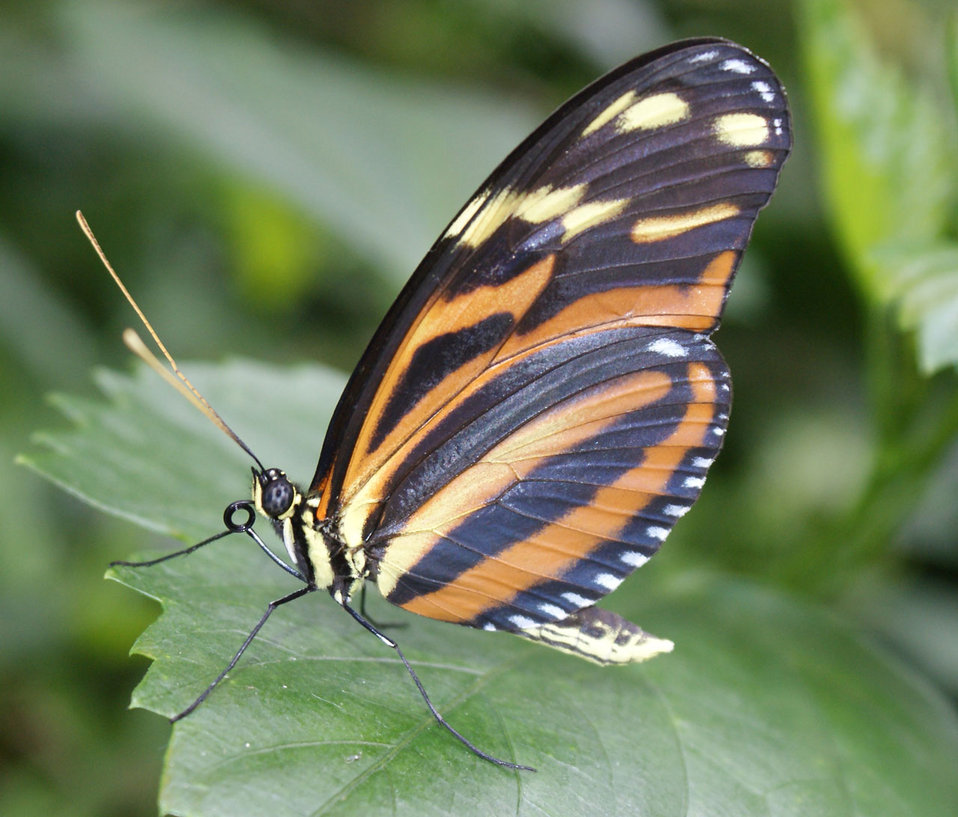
Lycorea cleobaea

Large tiger butterfly found in central america..